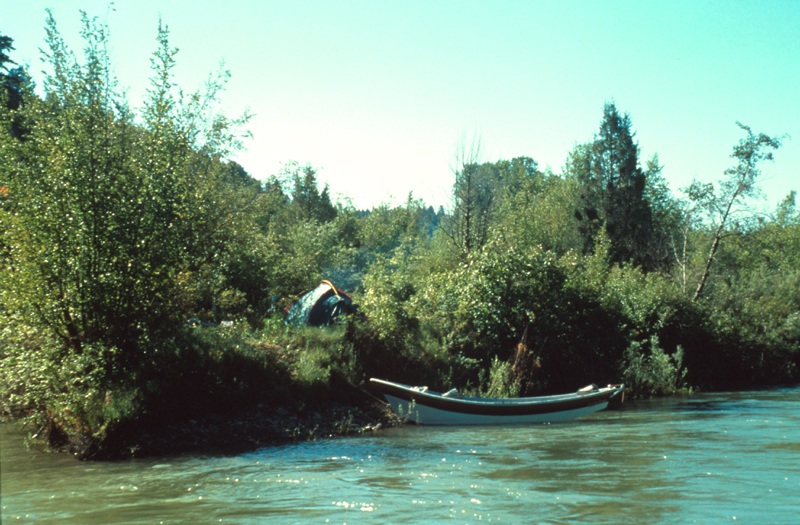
South Fork of the Snake River